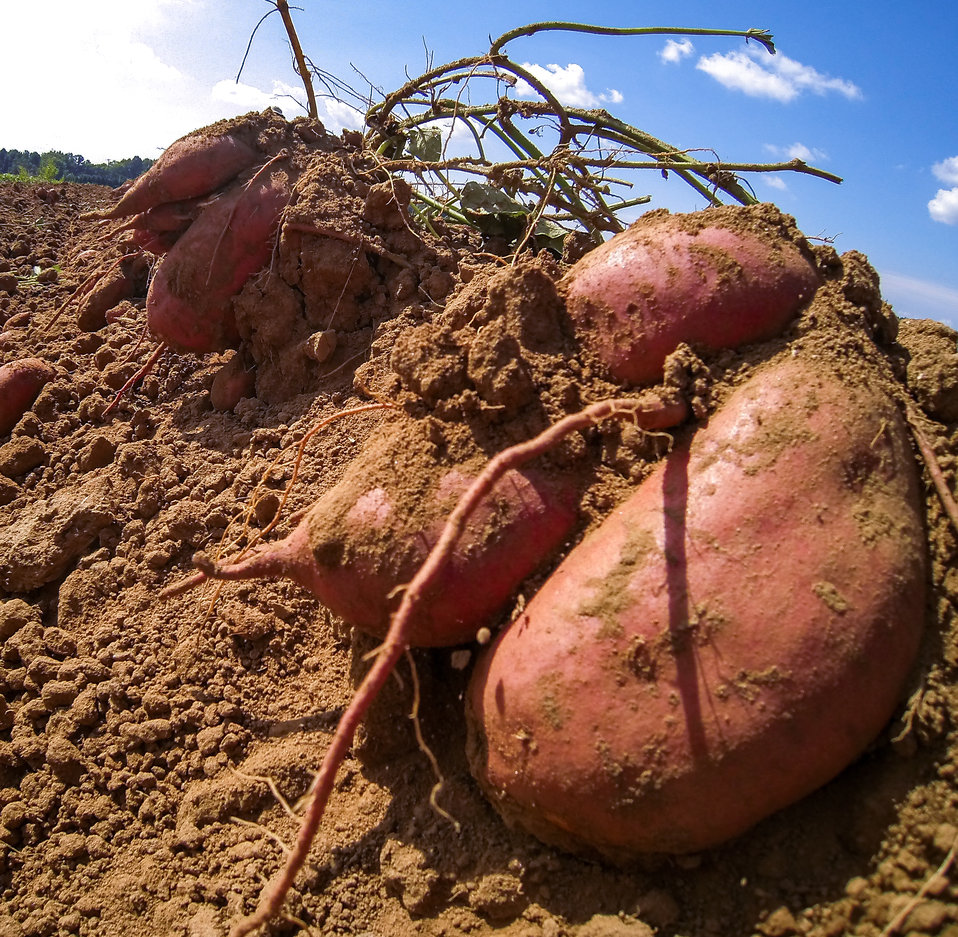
Migrant workers pick, separate, and process sweet potatoes at Kirby Farms in Mechanicsville, VA on Friday, Sept. 20, 2013. 200 acres of the farm are devoted to eggplant, spinach, beets, tomato, jalapeno peppers, melons and a variety of greens. Soybeans and small grain are grown on the remaining 300 acres. Using rotational crop practices allows Kirby Farms to double and triple crop yields. Wholesalers, who buy from this farm, sell the produce to major supermarkets in the Mid-Atlantic region, from North Carolina to Maryland. Restaurants in the local area prepare and serve the local bought produce to patrons in the Richmond, VA metropolitan area.